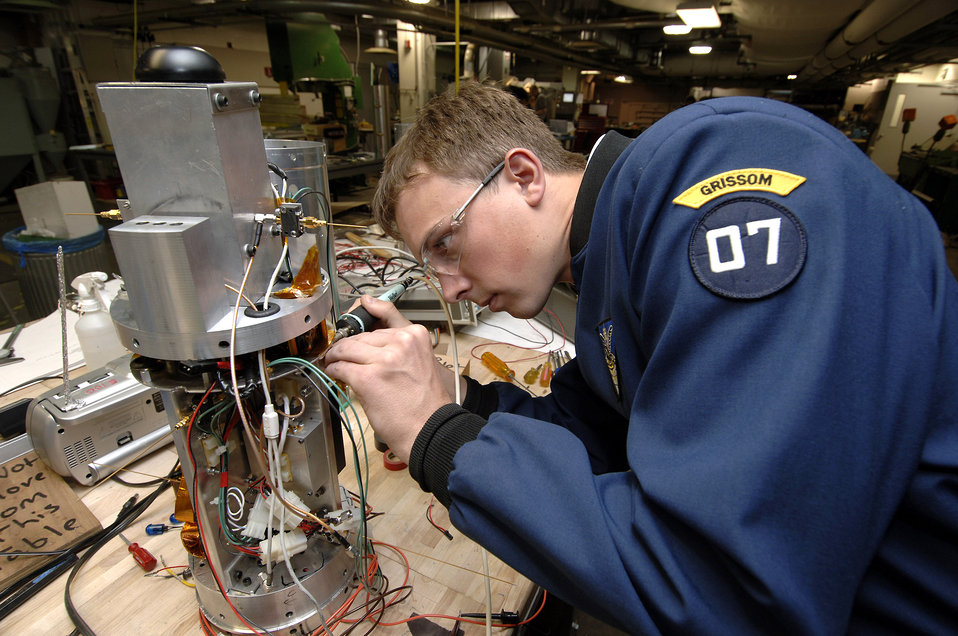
Satellite-savvy cadets accomplish out of world experiments

Senior cadet Harrison Sumerall performs the last electrical test on the Falcon Launch-5 avionics case April 12 at the U.S. Air Force Academy in Colorado Springs, Colo. The satellite is being designed and built by Academy cadets. It will be tested and operated by the cadets through the USAFA Space Systems Research Center.